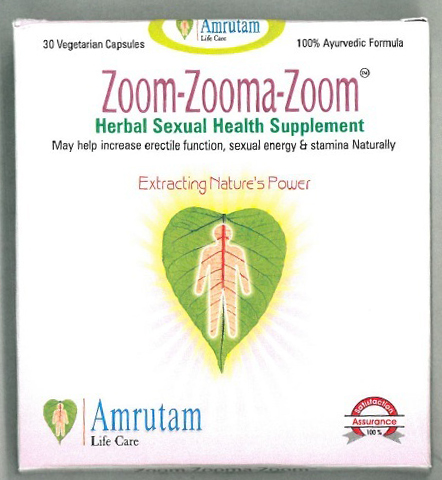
Zoom Zooma Zoom

April 25, 2013 - The FDA is advising consumers not to purchase or use 'Zoom-Zooma-Zoom,' a product promoted and sold for sexual enhancement. The product was found to contain undeclared sildenafil. For more information, go to www.fda.gov/Drugs/ResourcesForYou/Consumers/BuyingUsingMe...

And read this Consumer Update: Beware of Fraudulent ‘Dietary Supplements’